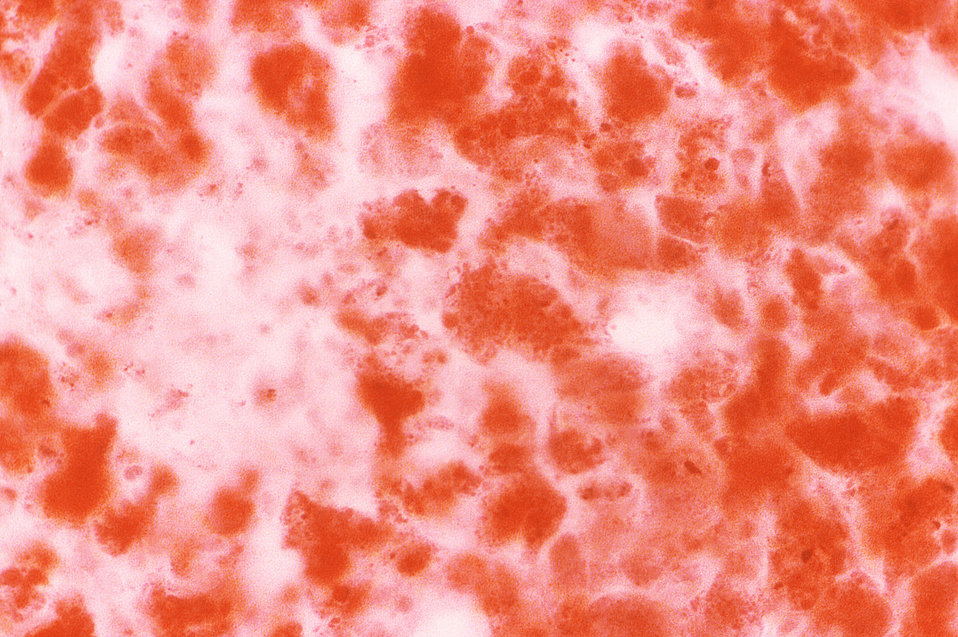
Under a very high magnification of 400X, this Sudan III-stained photomicrograph depicts the cytoarchitectural changes found in a liver tissue specimen extracted from a deceased yellow fever patient. Using the frozen section method of slide preparation, this tissue specimen revealed fatty degeneration, as evidenced by the presence of polyvacuolar and microvacuolar changes. See PHIL 2176, and 8239, depicting TEMs of the yellow fever virus.